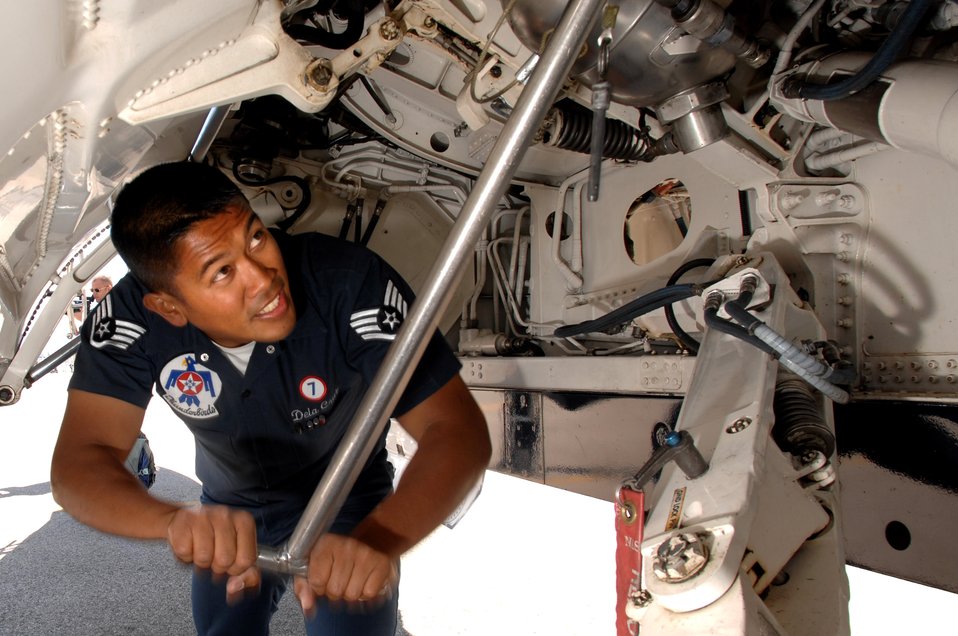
T-Birds getting ready for the airshow

Staff Sgt. Greg Dela Cruz, a crew chief with the Air Force Thunderbirds, services the fuel starter on one of the jets March 30 prior to a Thunderbird practice show at Naval Base Ventura County, Point Mugu, Calif.